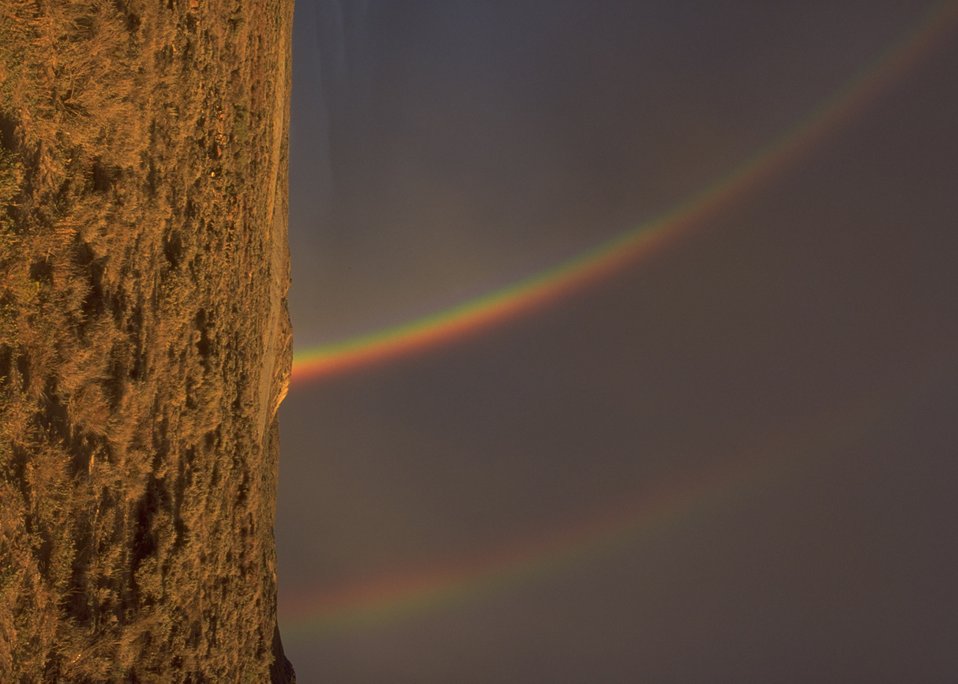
Rainbow in rangeland near OHV Sand Dunes Area, Rock Springs Field Office.